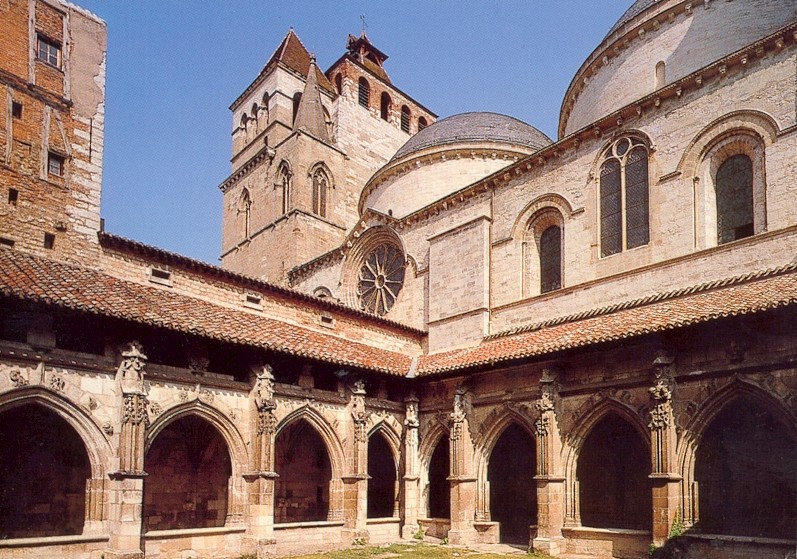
Fran√ßais†: Clo√Ætre de Cahors (Lot, Midi-Pyr√©n√©es, France).